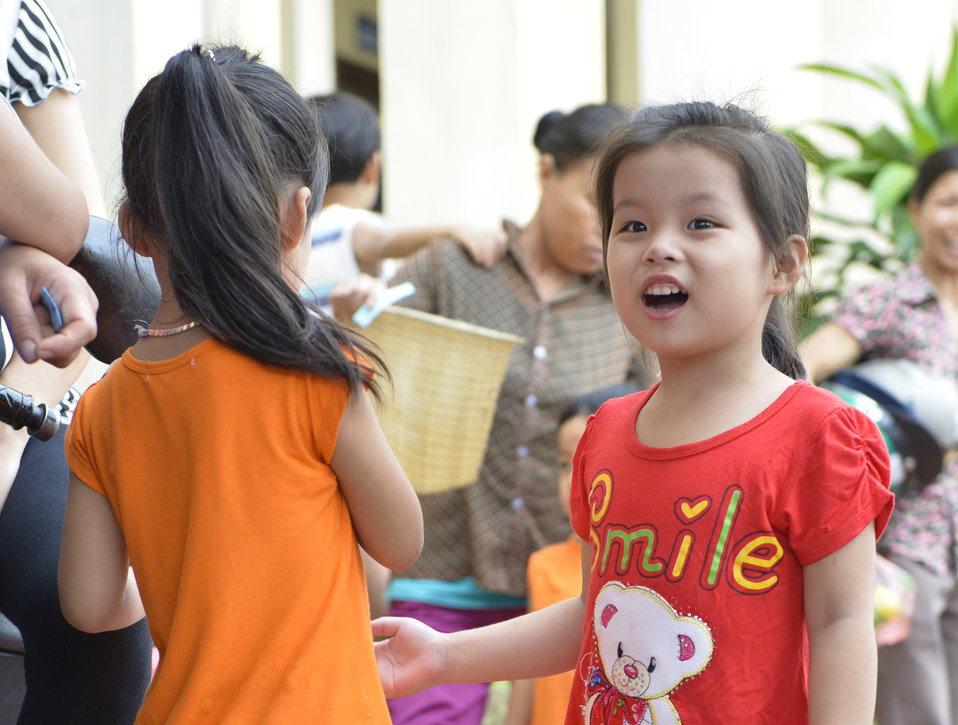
Eye screening for kindergarten children in Quoc Oai district of Hanoi

Quoc Oai, Hanoi. May 31, 2014.